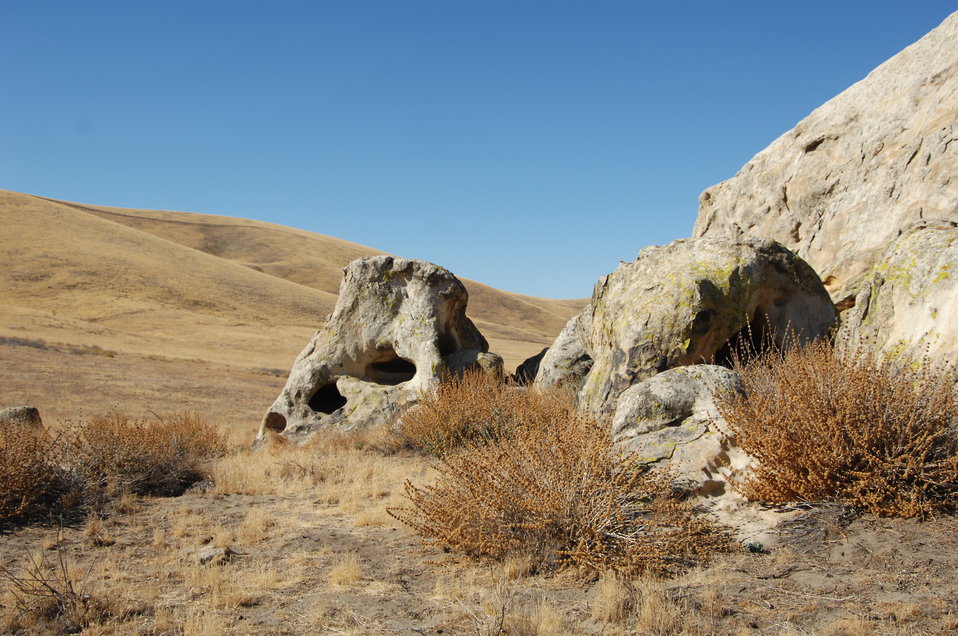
Painted Rock, Formation on the Carrizo Plain